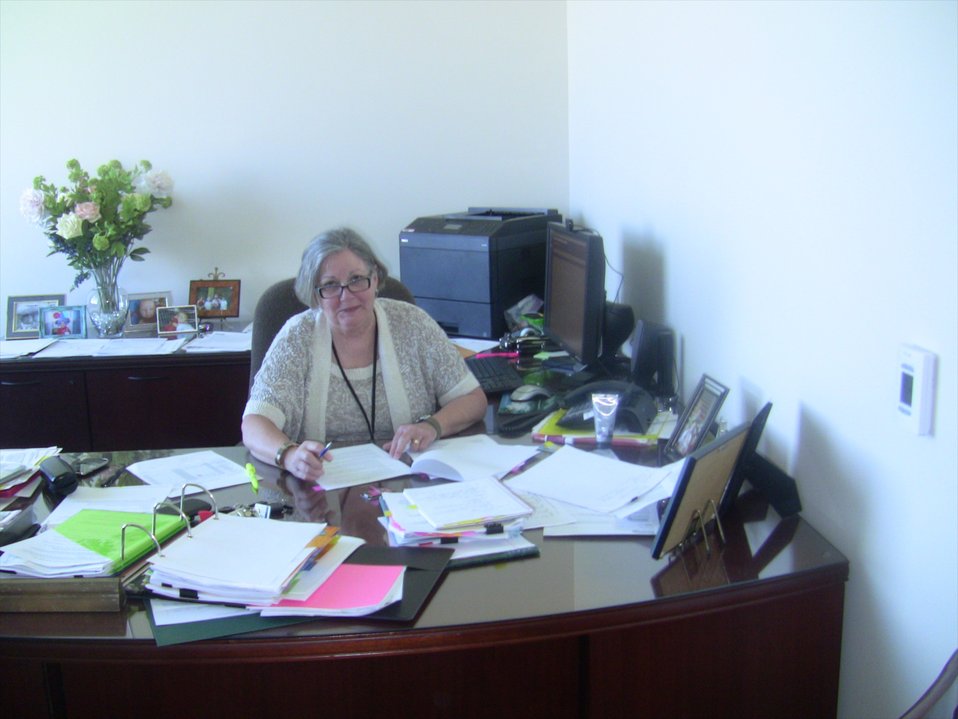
Barbara Voss hard at work; Location: National Archives at Denver, Broomfield, CO